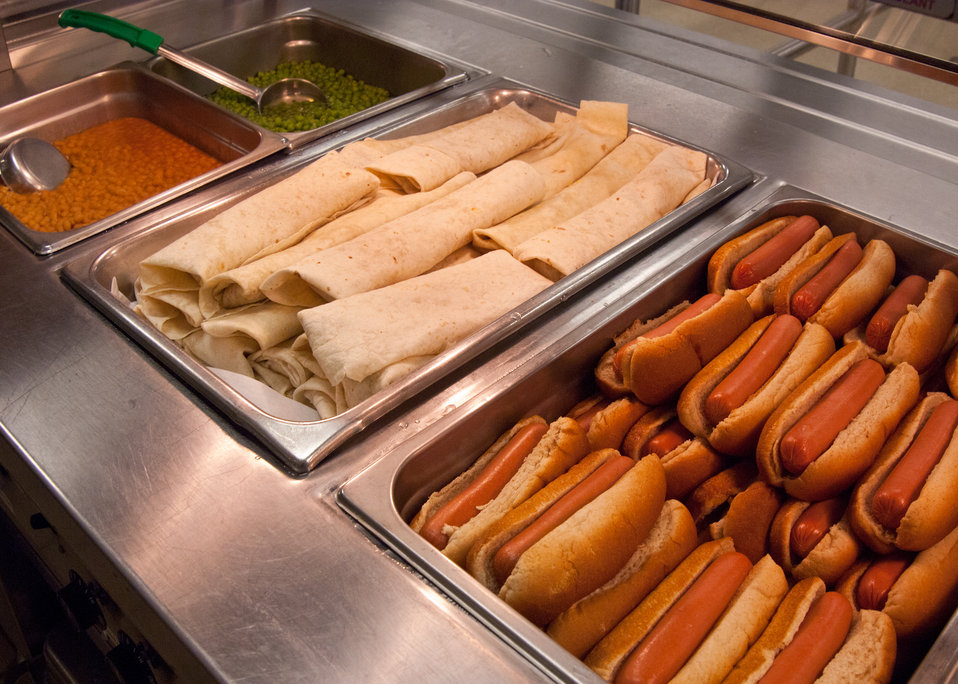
Healthy meal choices of Baja Fish Taco Wraps and Turkey Hot Dogs at Washington-Lee High School in Arlington, Virginia for lunch service on Wednesday, October 19, 2011. The taco’s and hot dogs are available through the National School Lunch Program. The National School Lunch Program is a federally assisted meal program administered by the United States Department of Agriculture, Food and Nutrition Service operating in public, nonprofit private schools and residential child care institutions. It provides nutritionally balanced, low-cost or free lunches to children each school day.